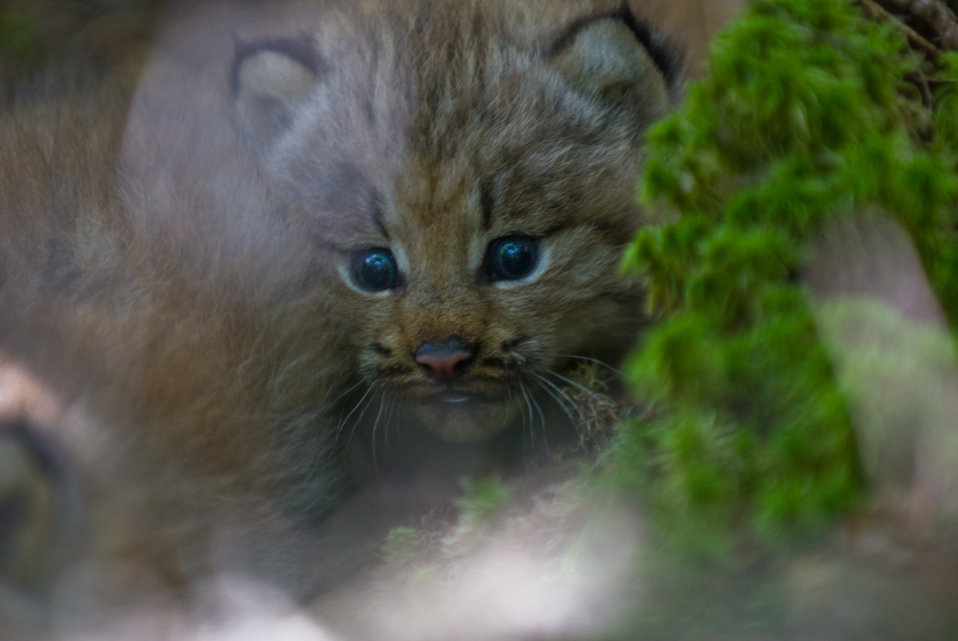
Canada Lynx Kitten

During the first den visit, a litter of two Canada Lynx kittens were discovered in a den covered in thick growth behind the structure of fallen trees.